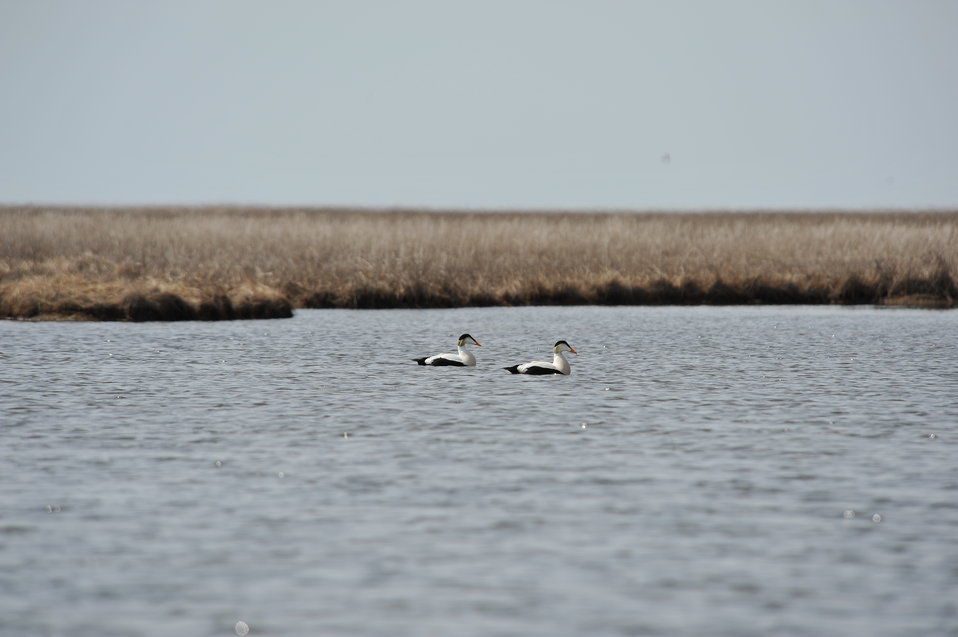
Common Eider males swimming

USFWS Yukon Delta NWR